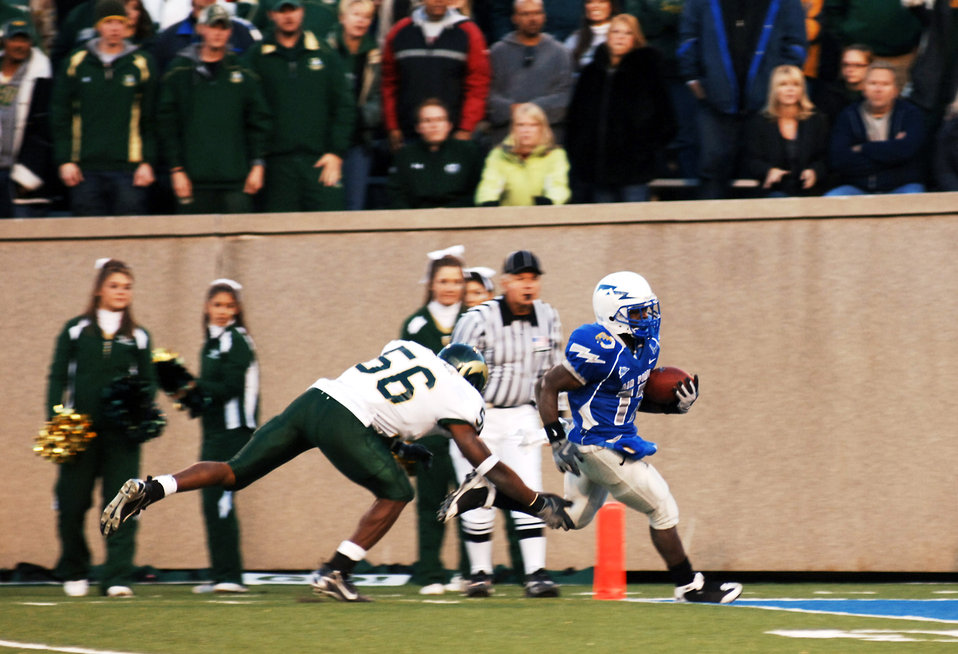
Falcons sheer Rams 38-17

Air Force Falcon freshman Asher Clark rushes for his first of two touchdowns against Colorado State University Nov.8 at Falcon Stadium in Colorado. The Falcons went on to beat the Rams 38-17, advancing their record 8-2, which is its best 10-game record since 1998 when the team opened 9-1.